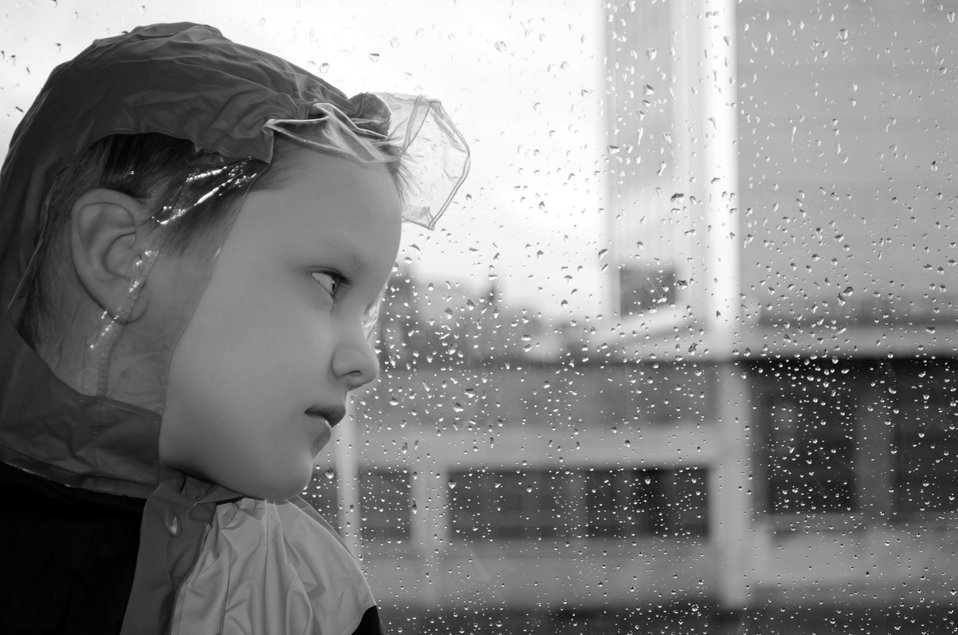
Child in a raincoat.